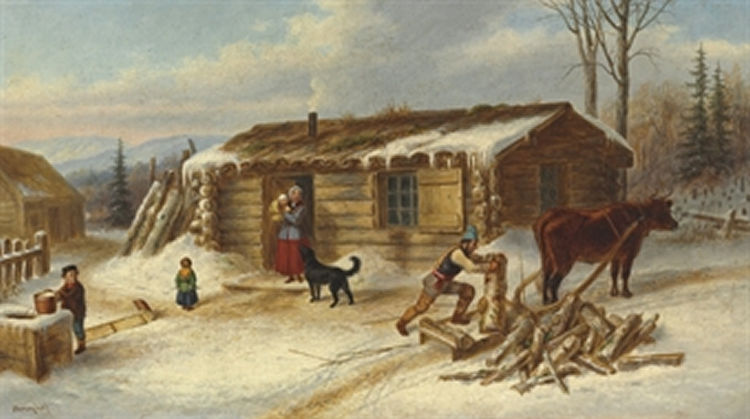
'Daily Chores', oil painting by Cornelius Krieghoff